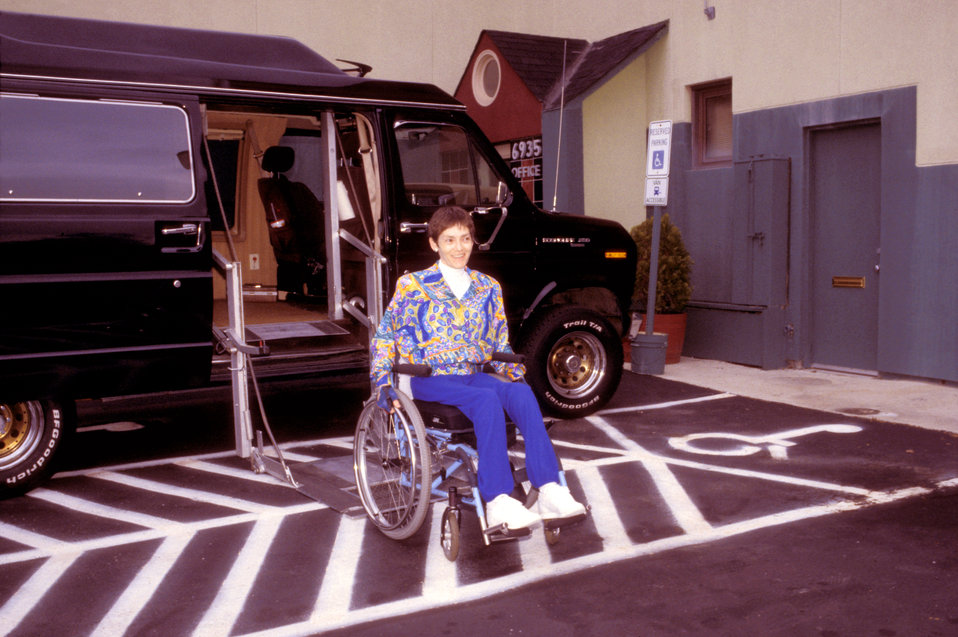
This was the fifth of six images (PHIL# 9068 - 9073) depicting a wheelchair-seated woman was shown in the process of exiting a wheelchair lift-equipped van parked in a van-accessible parking space. The space displayed both a pole-mounted sign, as well as a designated ground symbol, each adorned with the international symbol of accessibility. In addition, a wide aisle next to the van's parking space had been defined by striping on the ground, allowing ample space for the person using the side-mounted lift to exit safely and efficiently. The images showed the individual having first backed onto the lift, then descending to the ground. The woman then exited onto the striped space next to the van.